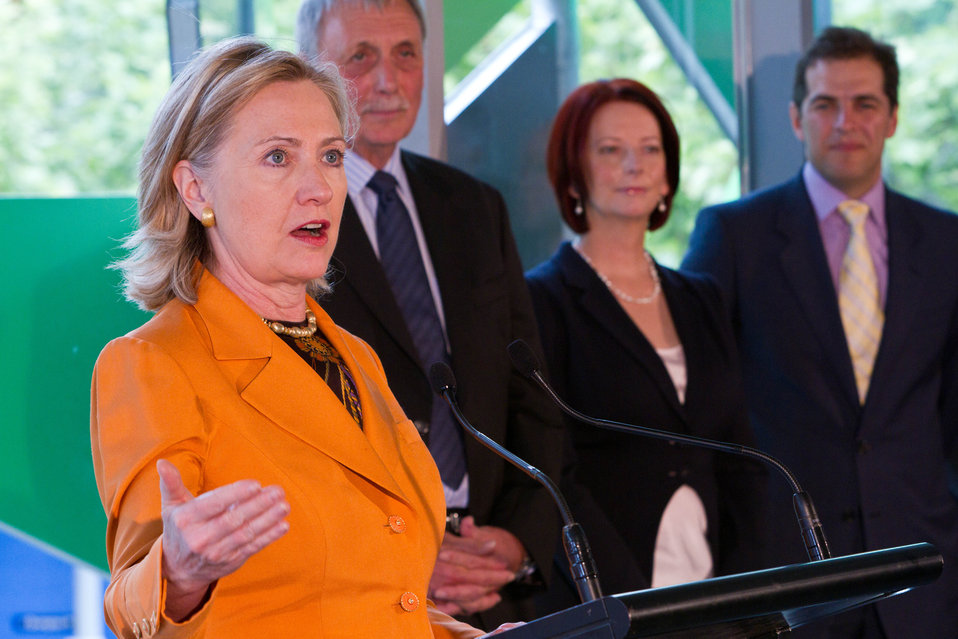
Secretary Clinton Delivers Remarks

U.S. Secretary of State Hillary Rodham Clinton, with Australian Prime Minister Julia Gillard (right), delivers remarks at the Pixel Building Clean Tech Event in Melbourne, Australia, on November 7, 2010.